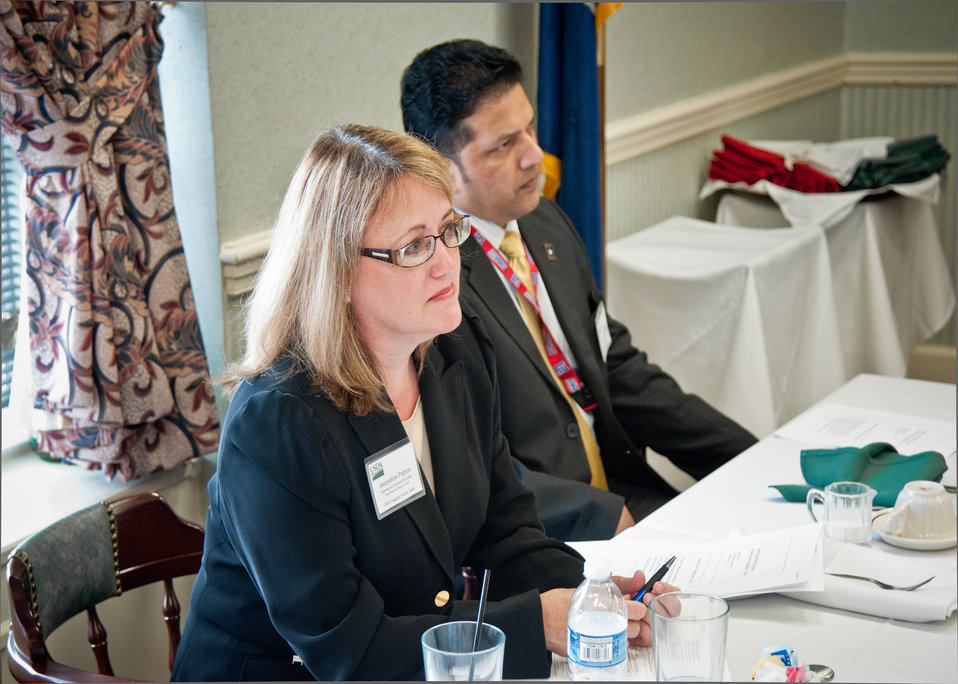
Jacqueline Padron (left), Diversity & Inclusion Specialist Focusing on Hispanics, Office of Human Resources Management and Monshi Ramdass (right), Director, Recruitment, Diversity and Work Life Programs, Office of Human Resources Management and Febe Ortiz, Management Analyst, Natural Resources Conservation Service facilitated the discussion: 'Where Can You Assist?' at the United States Department of Agriculture Hispanic Roundtable at the United States Department of Agriculture, Monday, December 5, 2011 in Washington, DC. The roundtable focused on recruitment, retention and employee development for the purpose of developing the USDA Hispanic recruitment Plan. The roundtable hosted several national Hispanic partners and recognized USDA Hispanic organizations and associations.